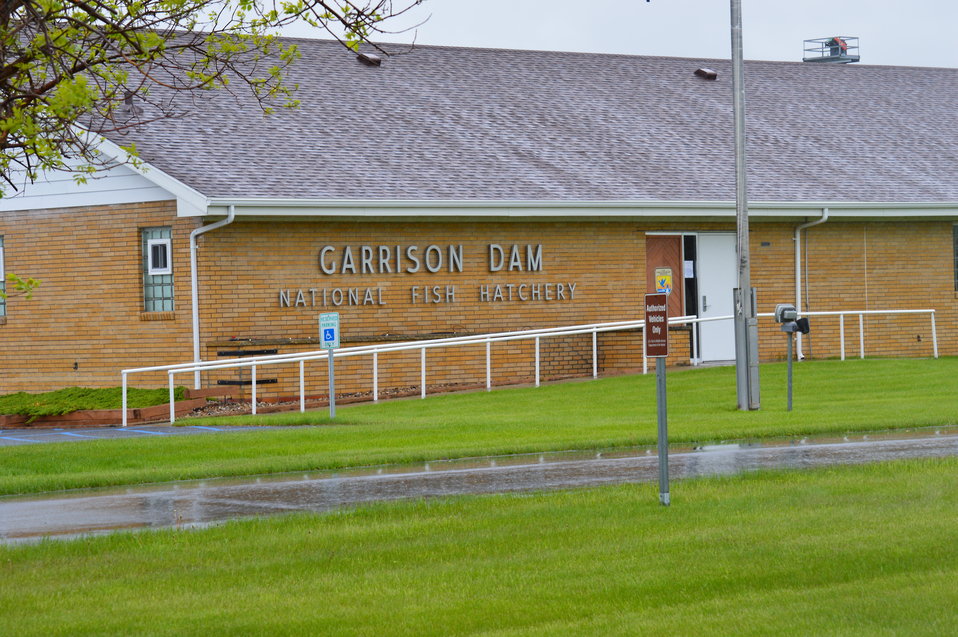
Garrison Dam National Fish Hatchery main building

Garrison Dam National Fish Hatchery in North Dakota.